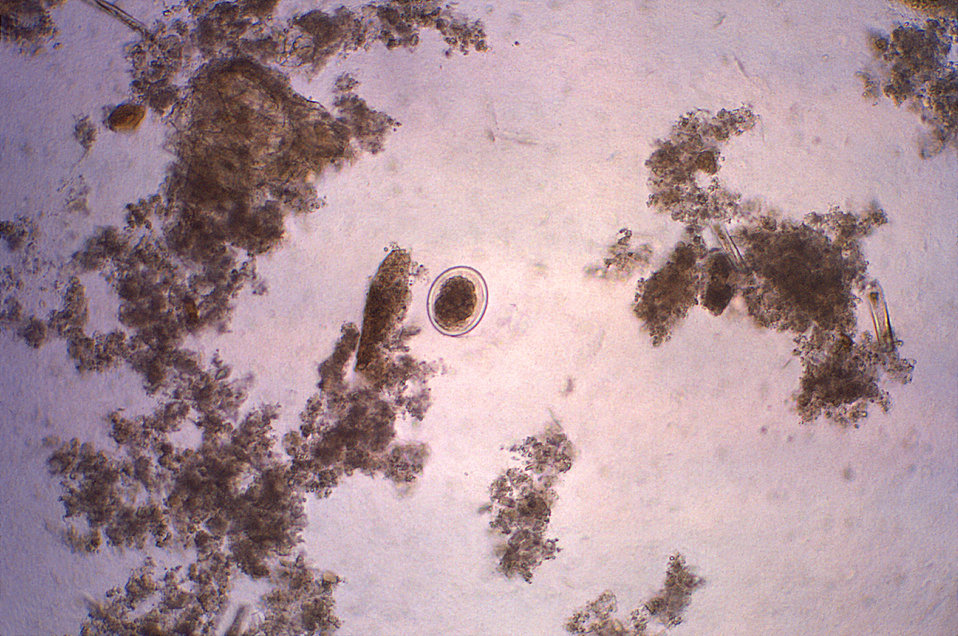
Magnified 128X, this photomicrograph revealed some of the ultrastructural features displayed by a fertilized, decorticated Ascaris lumbricoides egg. A. lumbricoides is the largest nematode (roundworm) parasitizing the human intestine.